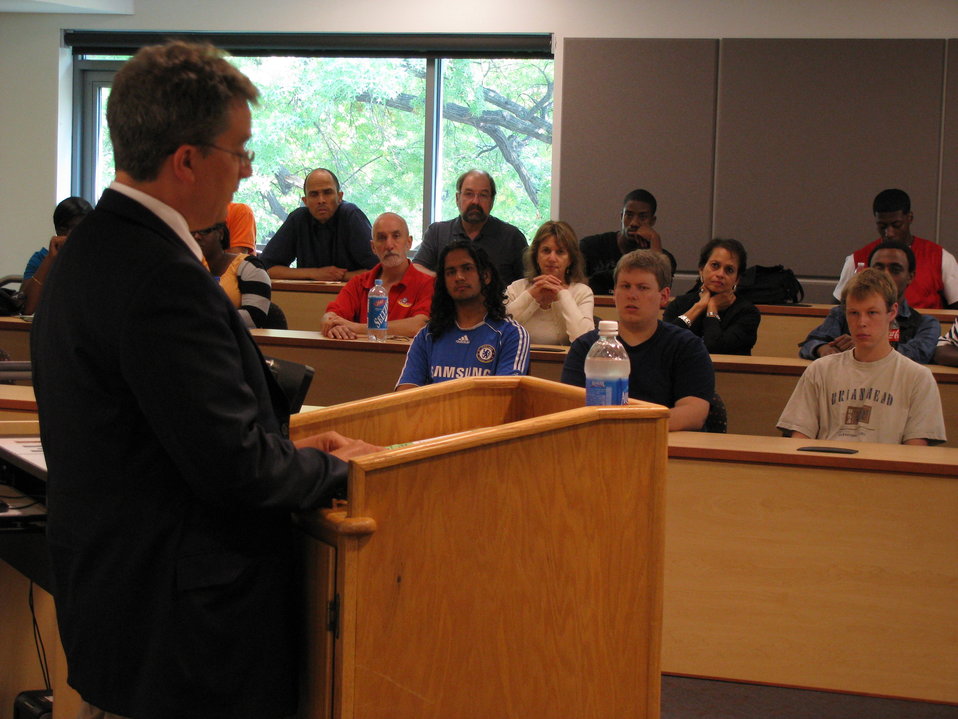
Ambassador Killion Speaks With Students at Montgomery Community College’s Takoma Park Campus

Ambassador David T. Killion, U.S. Permanent Representative to UNESCO, speaks with students about UNESCO’s role in advancing and promoting peace, at the Montgomery Community College Takoma Park Campus in Maryland, in celebration of their International Peace Week on September 14, 2011.